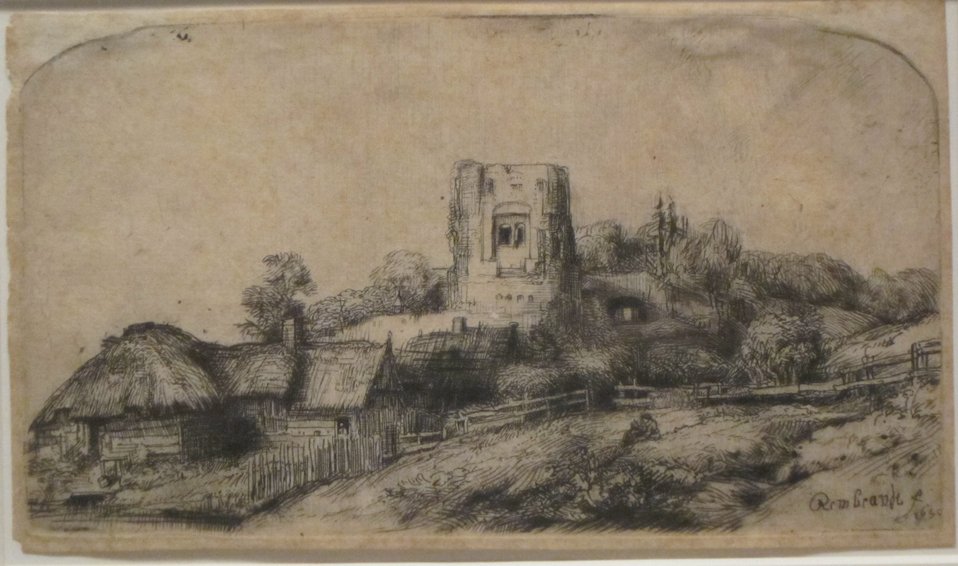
'Landscape with Square Tower' by Rembrandt van Rijn, 1650, etching and drypoint, Honolulu Museum of Art